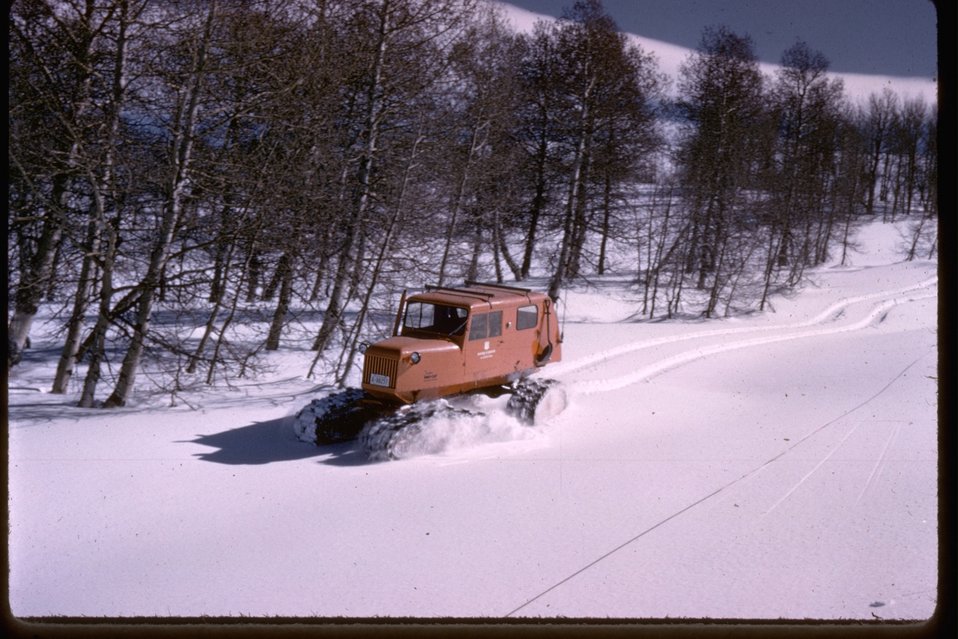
NRCS snow survey on Steens Mountain near Fish Lake.